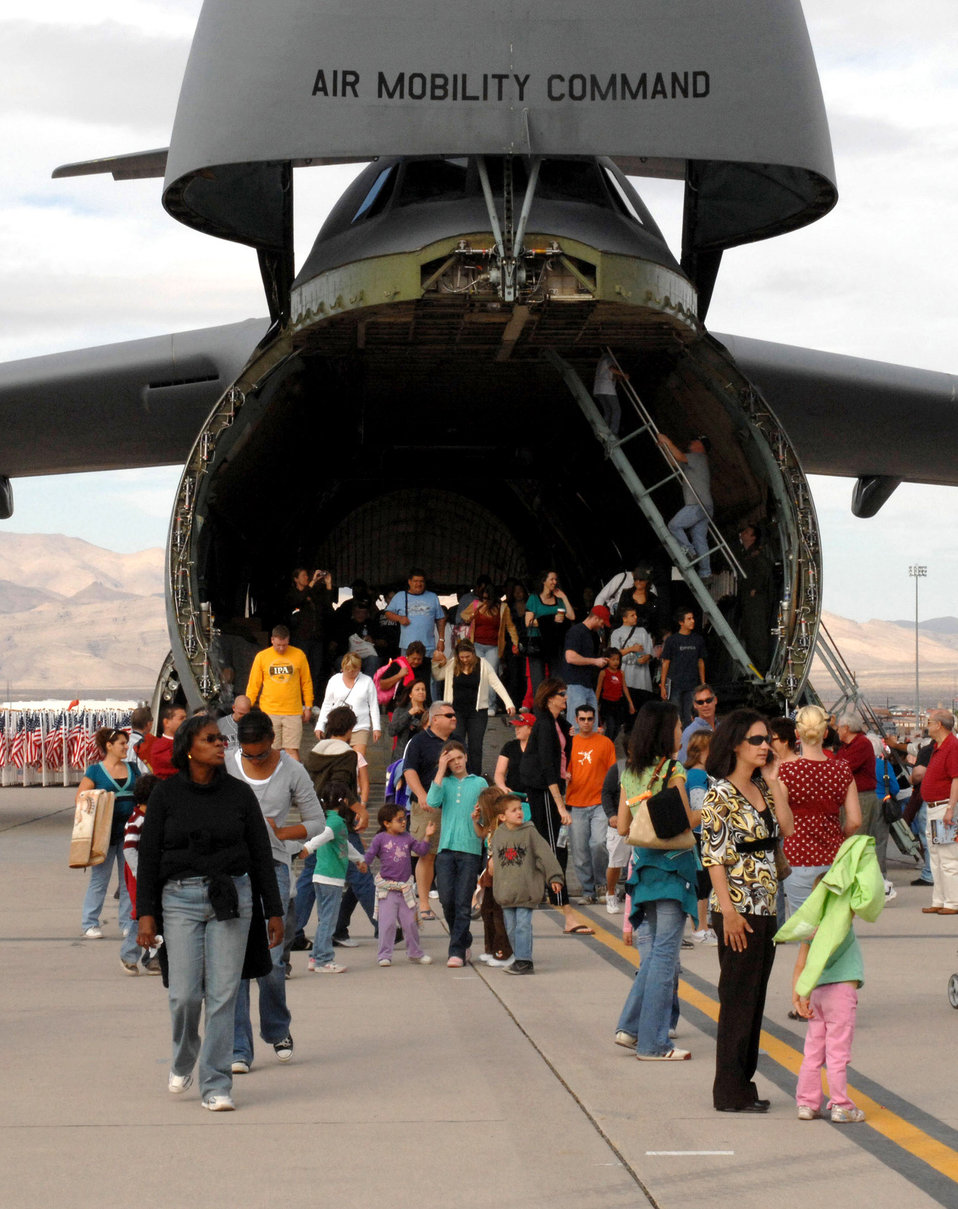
It's an aviation nation

Members of the Las Vegas community enter a C-5 Galaxy during Aviation Nation Air Show Nov. 11 at Nellis Air Force Base, Nev. Aviation Nation is one of the largest air shows in North America. This year's show commemorated 60 years of airpower and was the capstone event of the Air Force's yearlong 60th anniversary celebration.